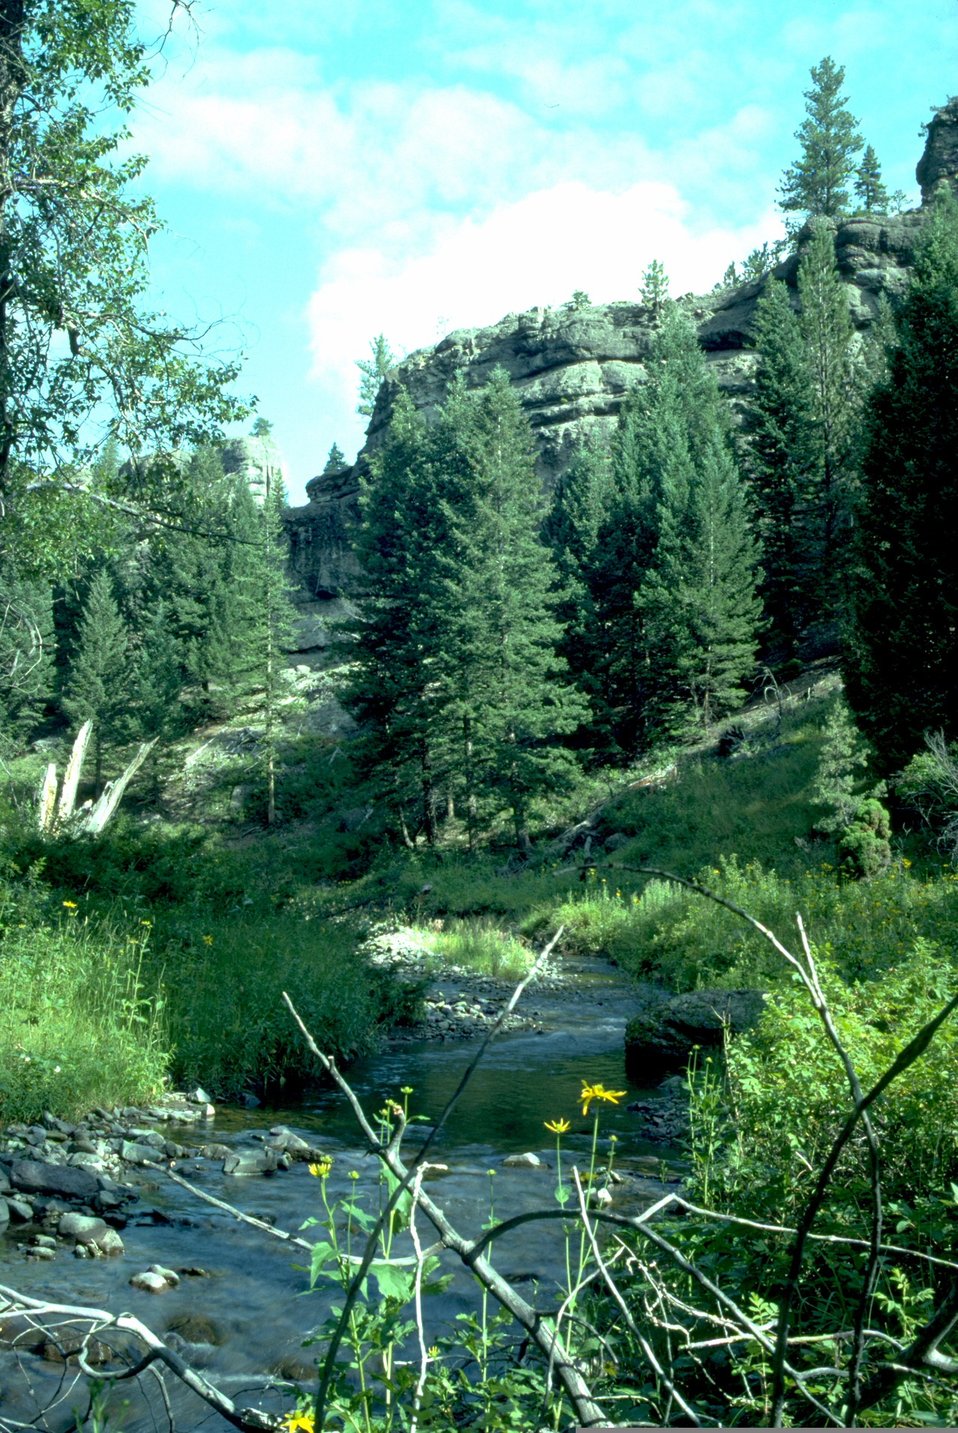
Scinic view, trees stream, sky